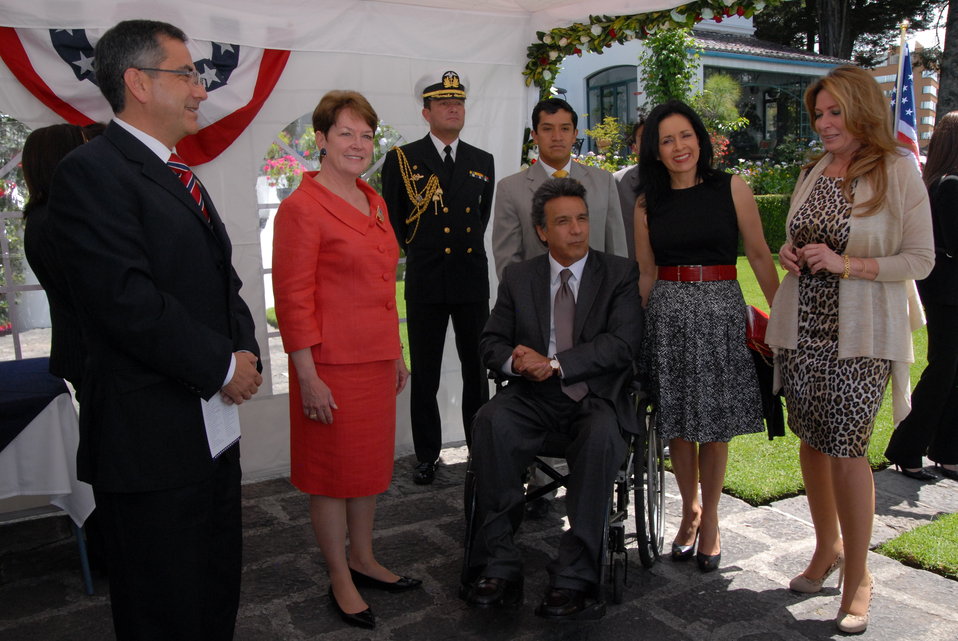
July 4th Celebration at U.S. Embassy in Ecuador

U.S. Ambassador to Ecuador Heather Hodges greets Ecuadorian Vice President Lenin Moreno, with Quito Mayor Augusto Barrera on her left and Rocio Moreno, and Ivonne Baki on her right, at U.S. Embassy Quito's U.S. Independence Day celebration on July 2, 2010.